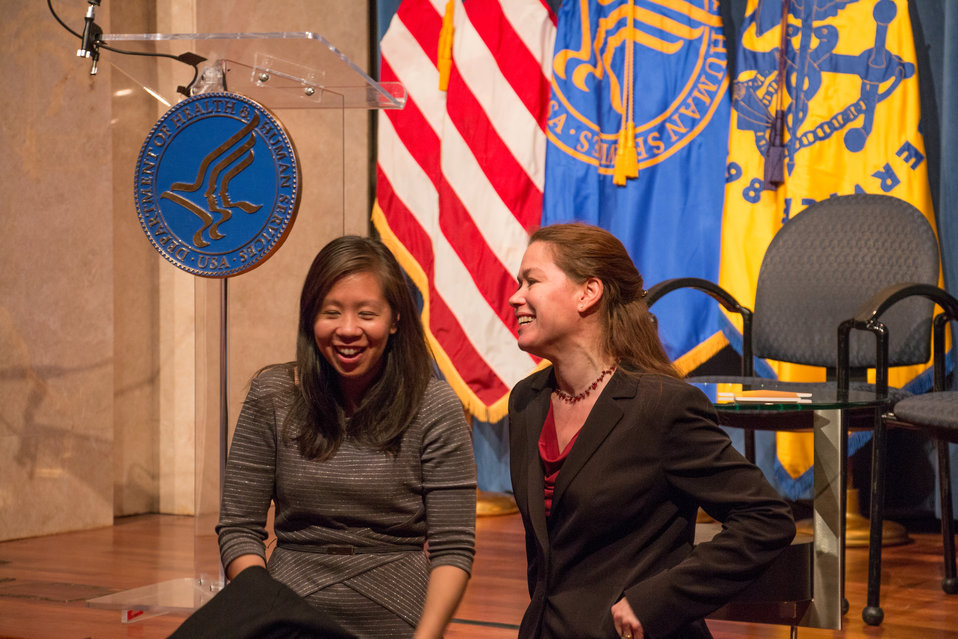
VHAP Launch (432 of 511)